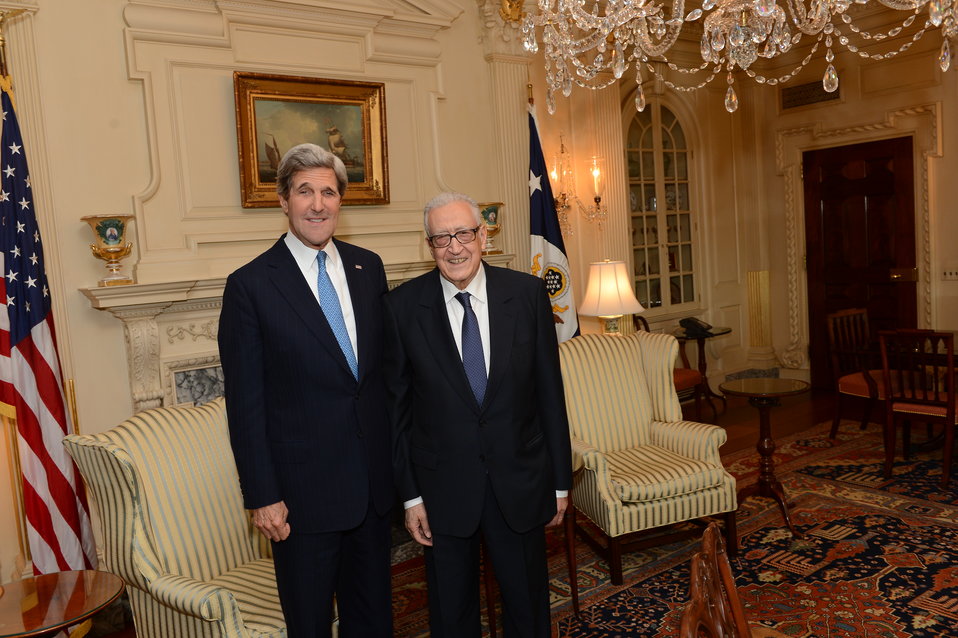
Secretary Kerry Meets With UN Peace Envoy to Syria Brahimi

U.S. Secretary of State John Kerry meets with UN Peace Envoy to Syria Lakhdar Brahimi at the U.S. Department of State in Washington, D.C., on April 29, 2013.